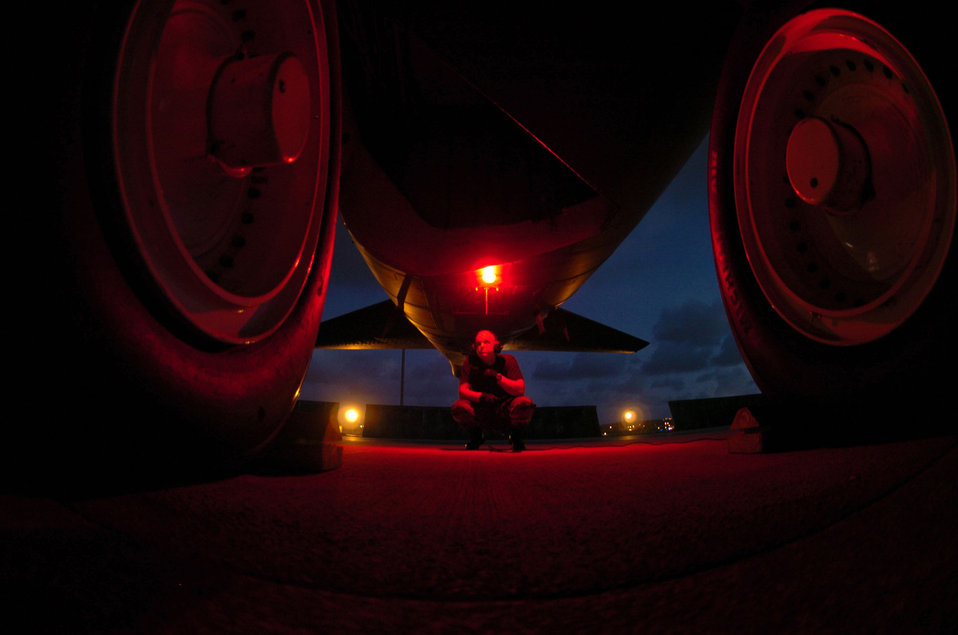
Pacific nights

ANDERSEN AIR FORCE BASE, Guam -- Senior Airman William Fay inspects the warning light inside the wheel well of a B-52 Stratofortress bomber during night flying here. He is a 5th Bomb Wing crew chief deployed from Minot Air Force Base, N.D. Airman Fay is among the first rotation of Airmen sent to Guam since U.S. Pacific Command officials decided to station a bomber force here. Officials said the continuous bomber presence is aimed at enhancing regional security, demonstrating United States' commitment to the Western Pacific and providing training opportunities that integrate bombers into joint and coalition forces in the Pacific.